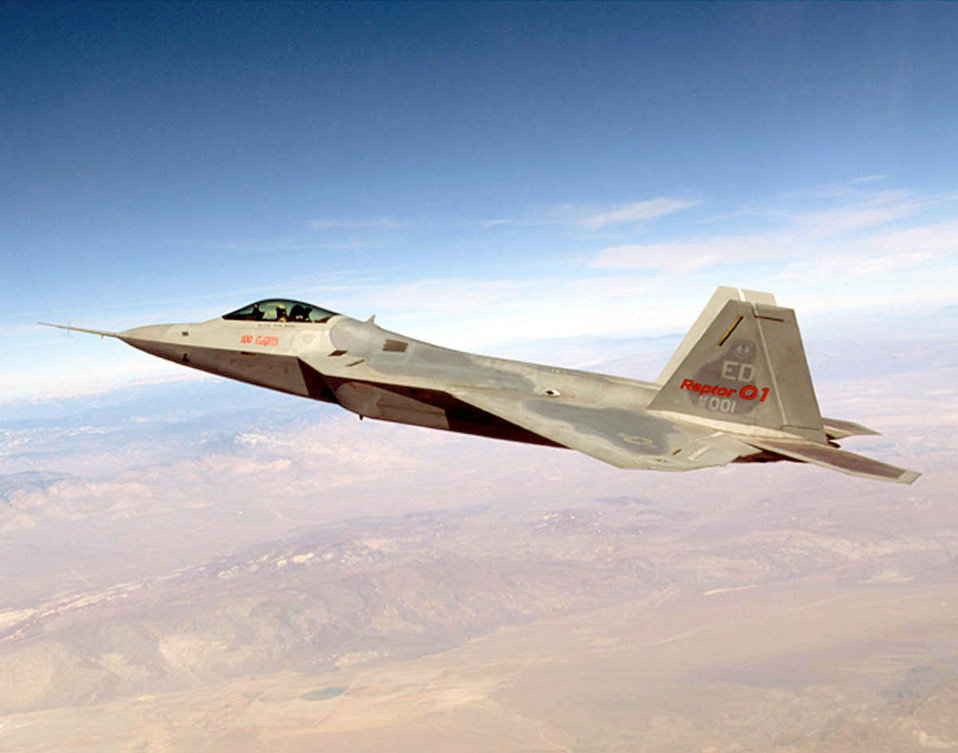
Raptor's 100th mission

F-22 Raptor 4001, the first of the Air Force's next-generation of air superiorty fighter jets, flew its 100th mission at Edwards Air Force Base, Calif., with Boeing test pilot Chuck Killberg at the controls. The F-22 is undergoing the most extensive and sophisticated testing of any combat aircraft ever developed, giving the Air Force and its industry partners adequate time to properly design, build and test the Raptor before being put into production.